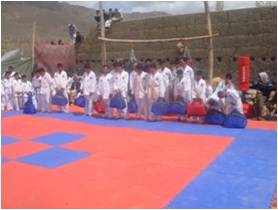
Promoting Peace Through Sport

Located in the foothills of central Afghanistan, Jalrez District in Wardak Province is known as the home of the country’s finest athletes. This reputation inspired the establishment of the Jalrez Youth Association (JYA) in 2008 through USAID support.

The JYA was poised to make a positive difference in the district with departments for information and culture, counternarcotics, health and active sports. However, the JYA Community Center lacked appropriate office space and equipment. The gym contained only rudimentary homemade equipment.

Despite these disadvantages, JYA team members continued to participate in various sports events in the area, proving the JYA’s value as a resource for Wardak’s youth. These successes did not, however, bring the association the resources it needed to secure safe athletic equipment, or to furnish office space to accommodate the expansion of the organization and its programs.

In December 2009, the JYA turned to the Community Development Council (CDC) for help. The CDC worked with USAID’s Local Governance and Community Development project (LGCD) to secure funds to purchase the equipment and office furnishings that the JYA needed to succeed. A formal handover ceremony occurred on March 30, 2010, with representatives of the local government and the JYA in attendance.

At the ceremony, Razziddin Shah, the head of the JYA, thanked the CDC and USAID for their support, stating, “Now we will be trusted by other organizations. Enrollment is increasing day by day.”

In turn, the deputy provincial governor, Alli Ahmad Khashee, expressed his appreciation to the association for its service to the community and its role in promoting peace in Jalrez.

As USAID’s flagship stabilization program, LGCD works to engage communities in unstable areas to take an active role in their own security and addresses grievances of at-risk populations through integrated community development projects.